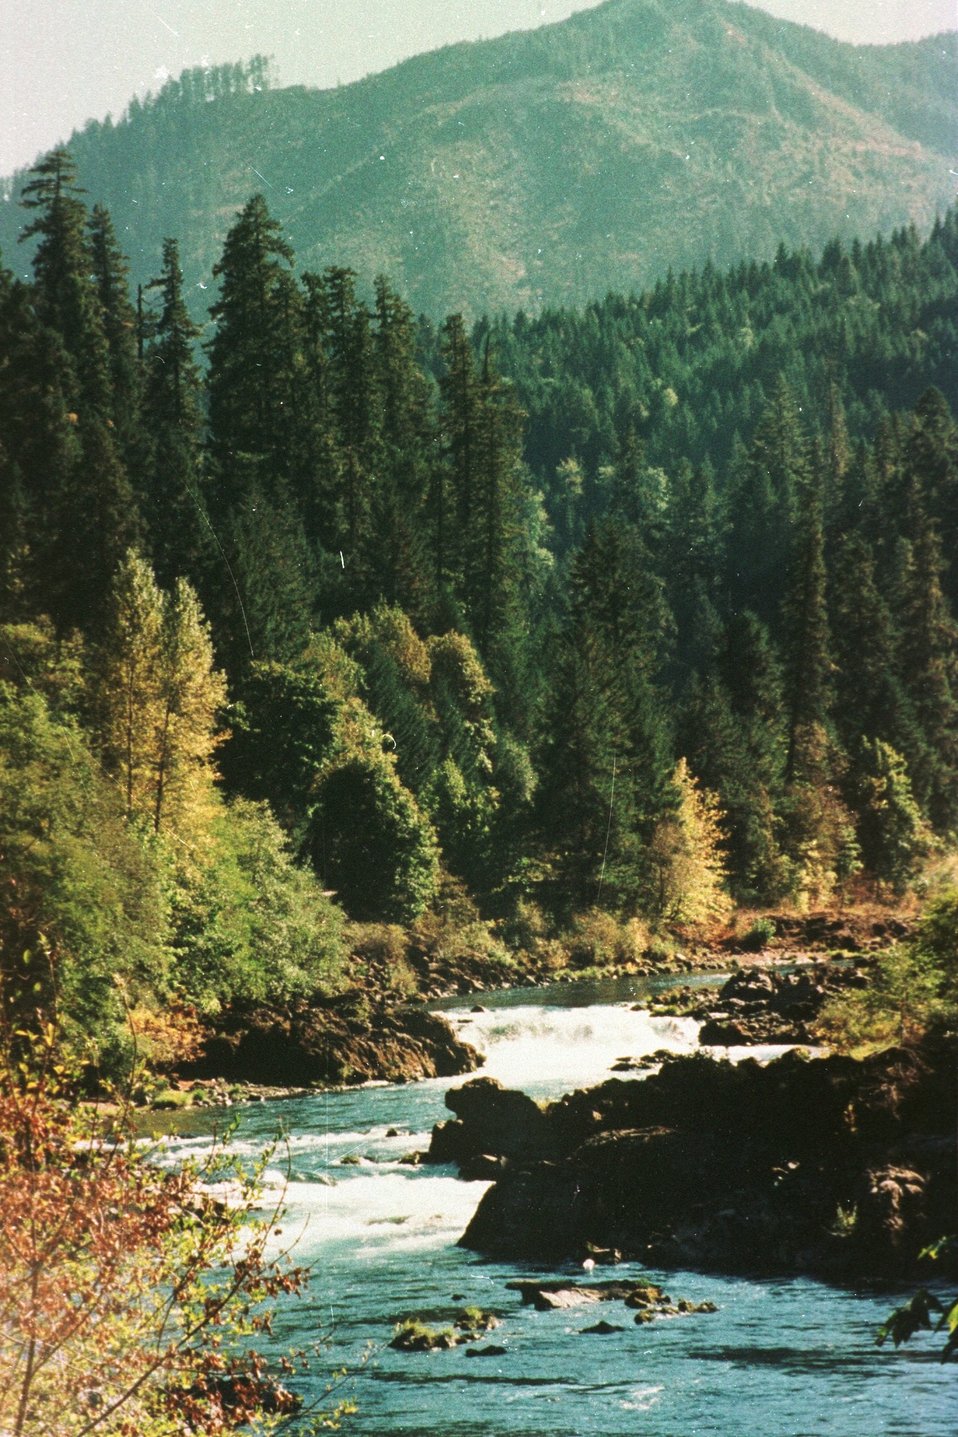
Scenic shot of a small river/stream.